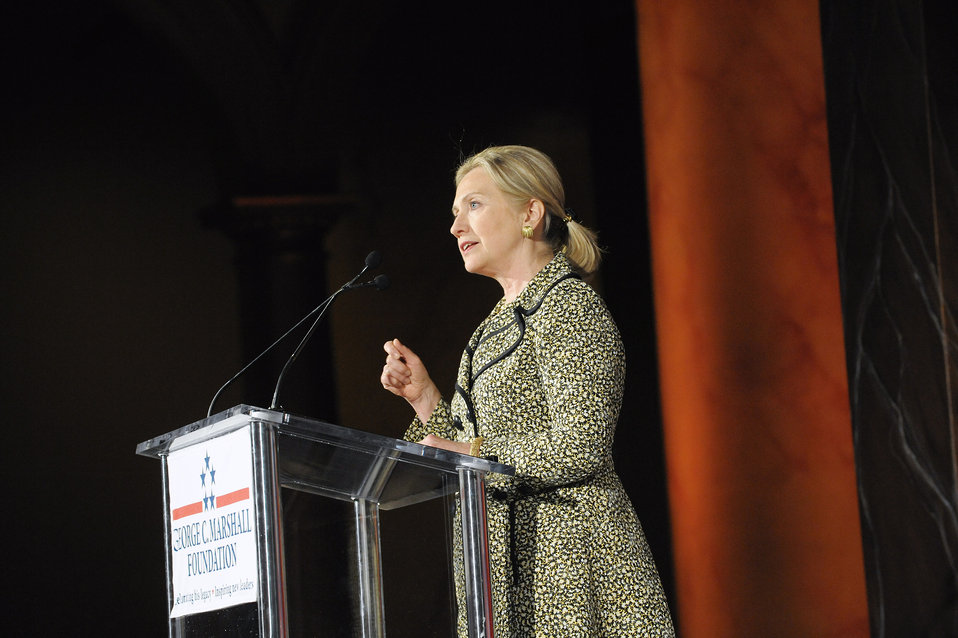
Secretary Clinton Delivers Remarks Upon Receiving the 2011 George C. Marshall Foundation Award

U.S. Secretary of State Hillary Rodham Clinton delivers remarks upon receiving the 2011 George C. Marshall Foundation Award at the National Building Museum in Washington, D.C., on June 2, 2011.